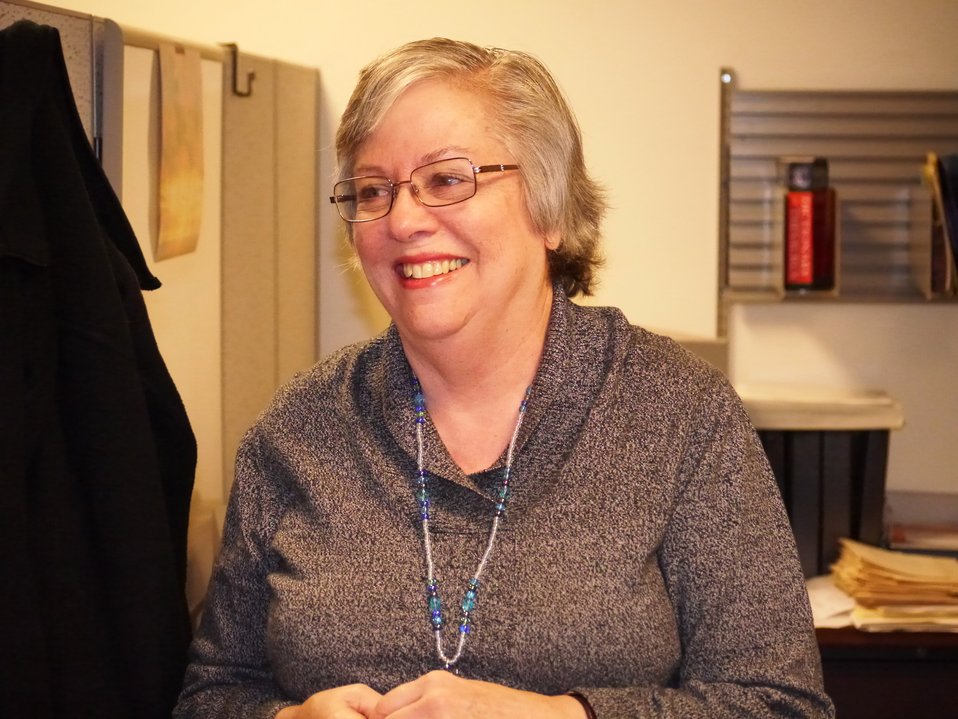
A rare photo of Archivist Barbara Rust; Location: John Burgess Facility, National Archives at Fort Worth, Fort Worth, TX